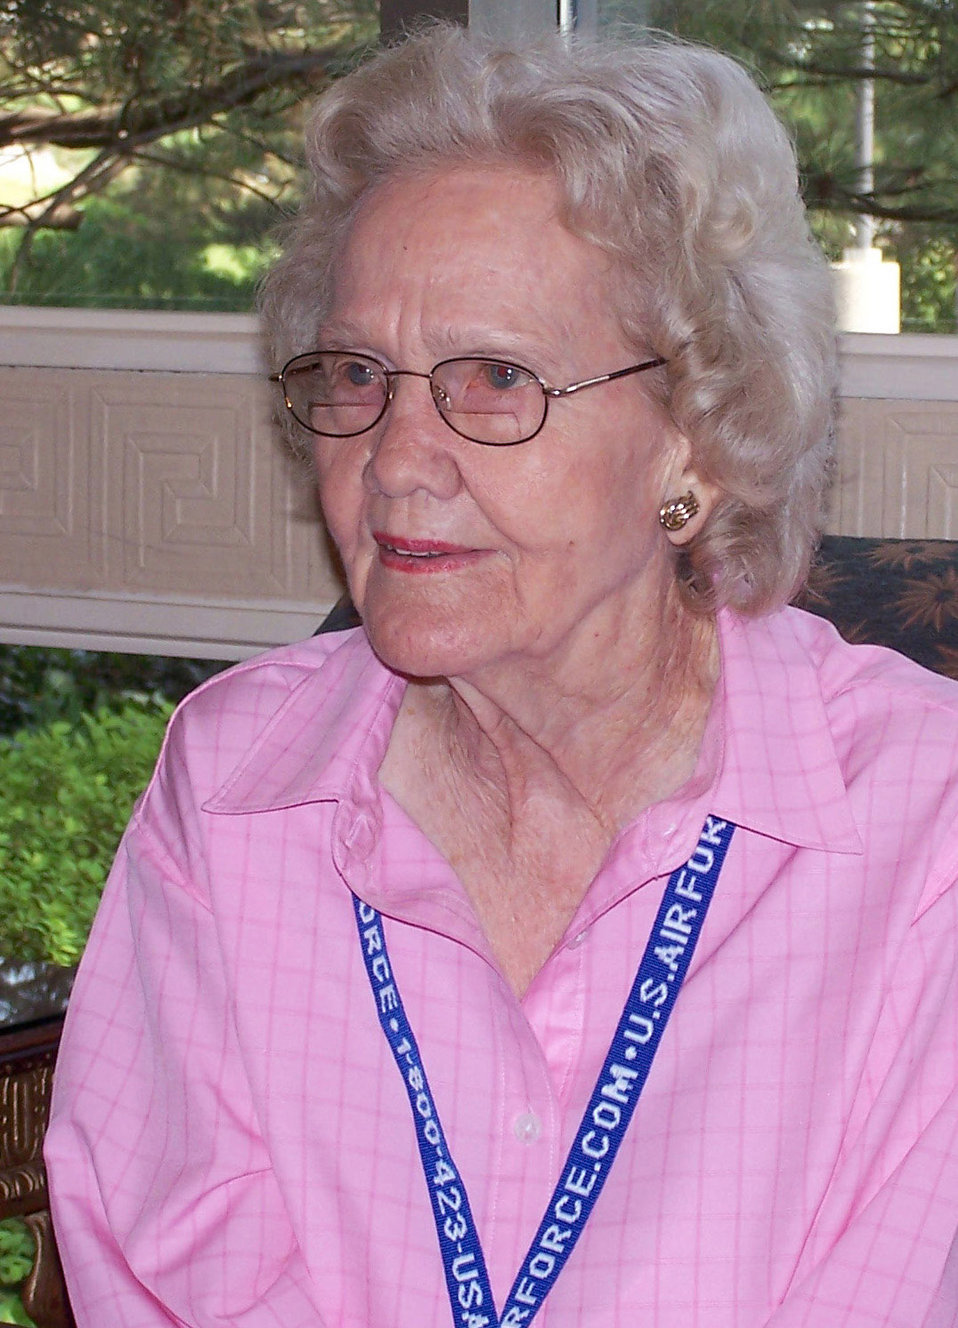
World War II vet recalls her service

Smitty McClellan during a military reunion in Overland Park, Kan., in September.